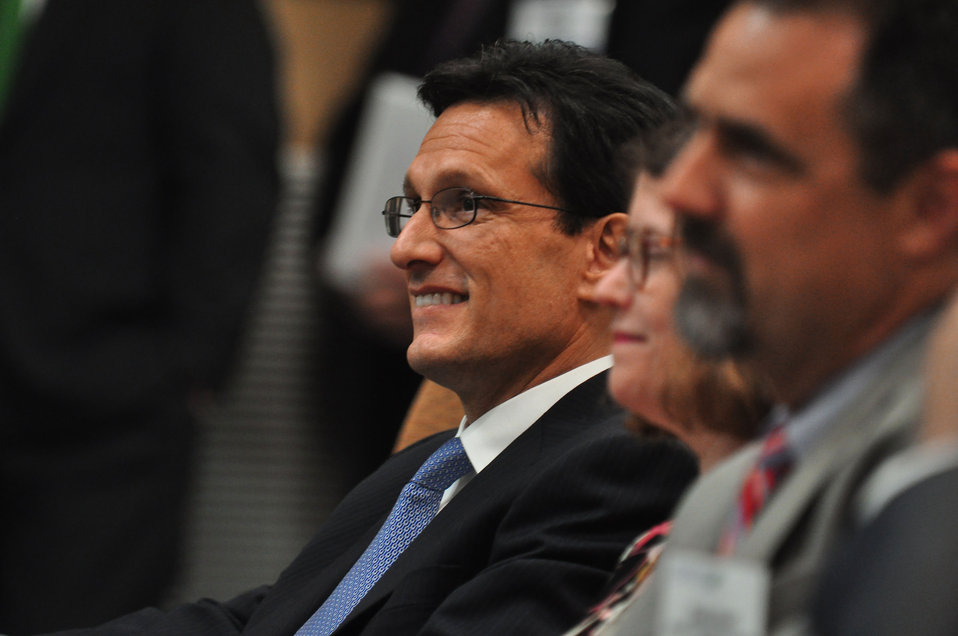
Congressman Eric Cantor Majority Leader Tennessee Valley Corridor Summit Oak Ridge

13-062 DOE photo Lynn Freeny 5-29-2013 Oak Ridge Tennessee